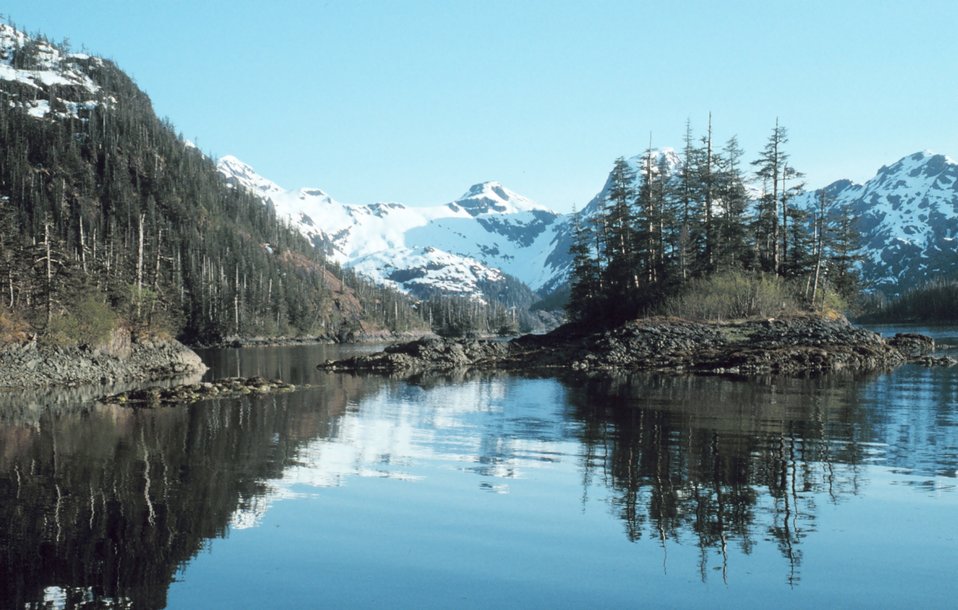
Scene in Prince William Sound